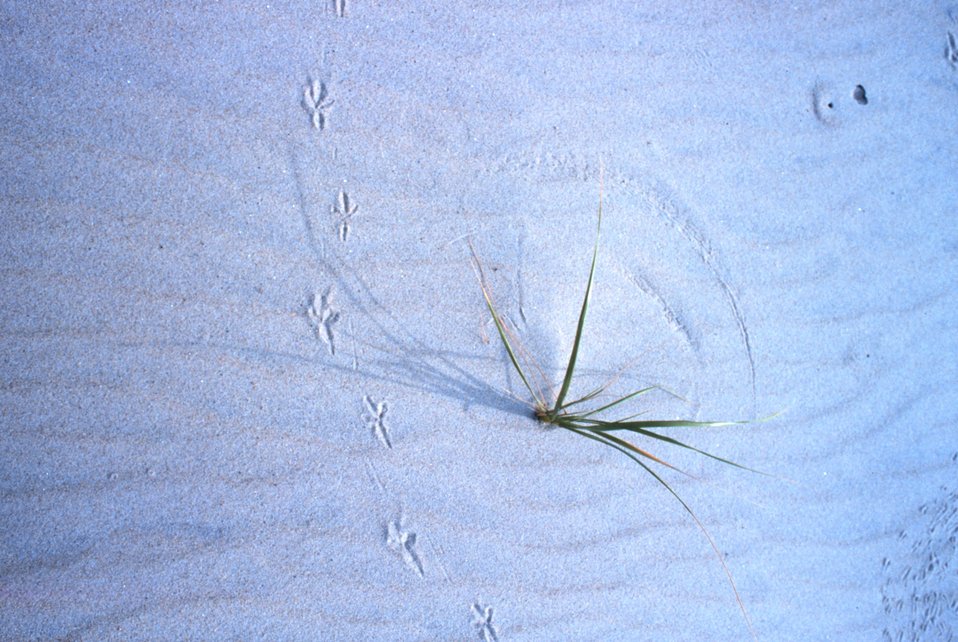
Wind-swept dunes near the abandoned Coast Guard Station